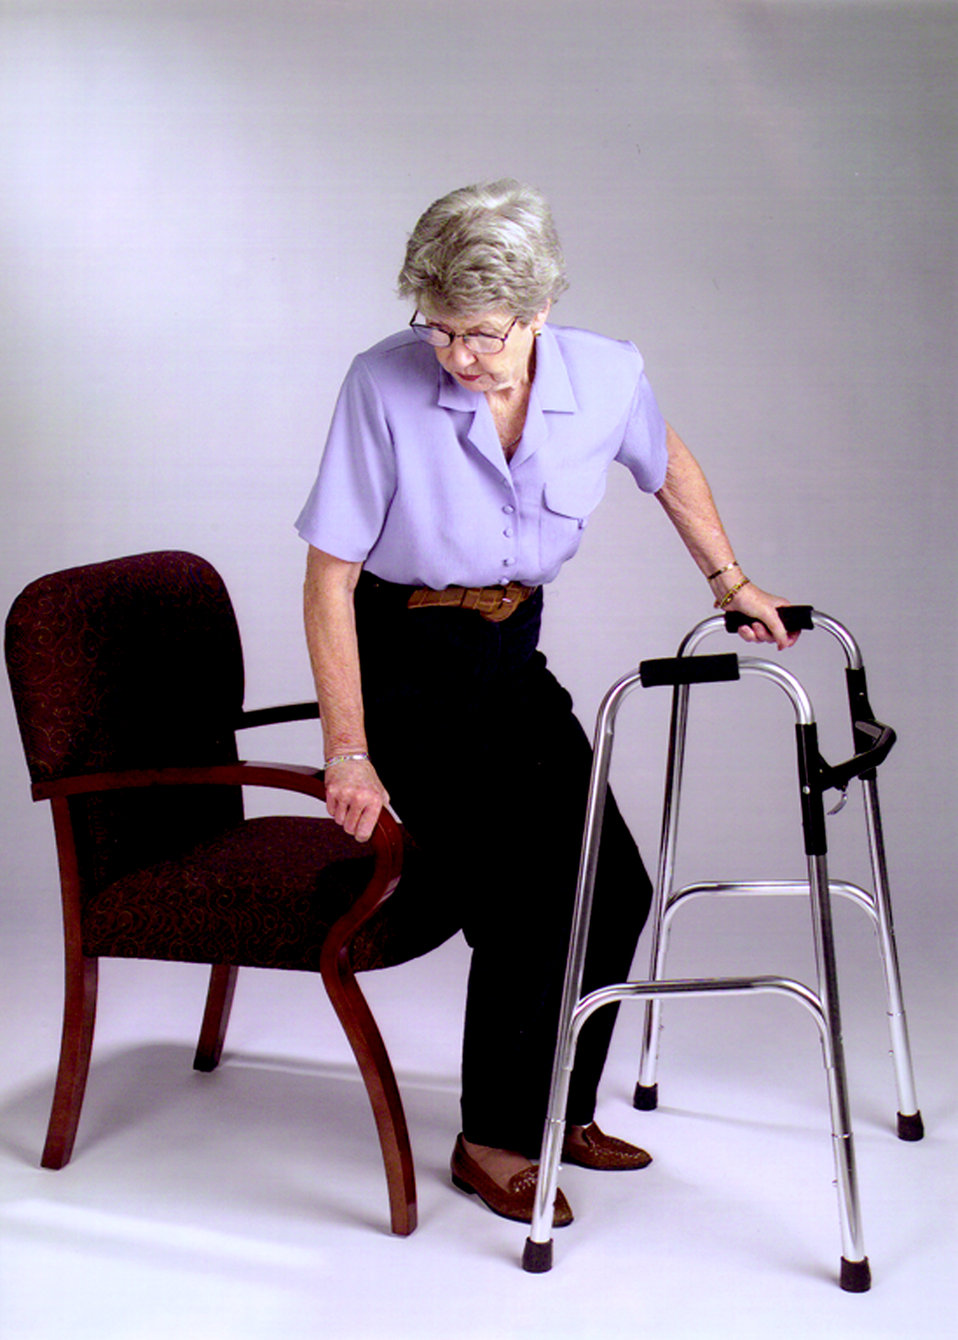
This is one of a series of ten images, (PHIL# 9144 - 9153), depicting one of LifeSpan� Furnishing's line of chairs, designed to make sitting down and rising safer and easier, and sitting more comfortable and supportive. An elderly woman was in the process of sitting down, and was using a walker to stabilize this activity. These chairs combined aesthetics and function, and were more comfortable for most people, benefiting those who would care for others, by reducing physical exertion and stress needed when assisting others. The user could take advantage of the extended arms for stability when lowering or rising from a seated position. Close attention was paid to many small details including the non-skid rubber feet, and the elimination of pinch points and sharp edges. The LifeSpan� seating product line included four different designs, all based on an extended arm and leg concept that provided users with better leverage and support.